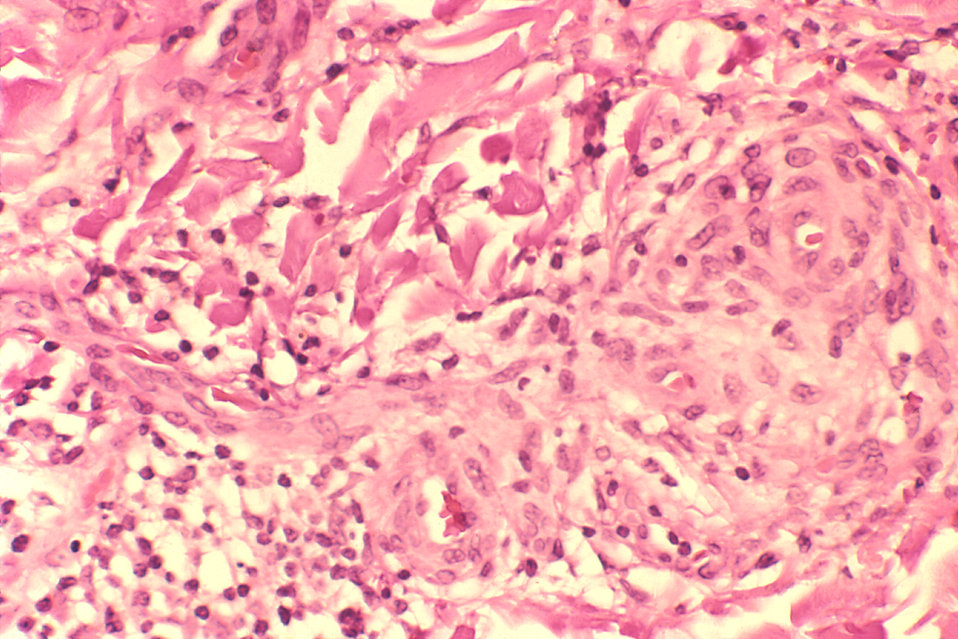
Early skin lesion of Kaposi's sarcoma in patient with AIDS (biopsy).